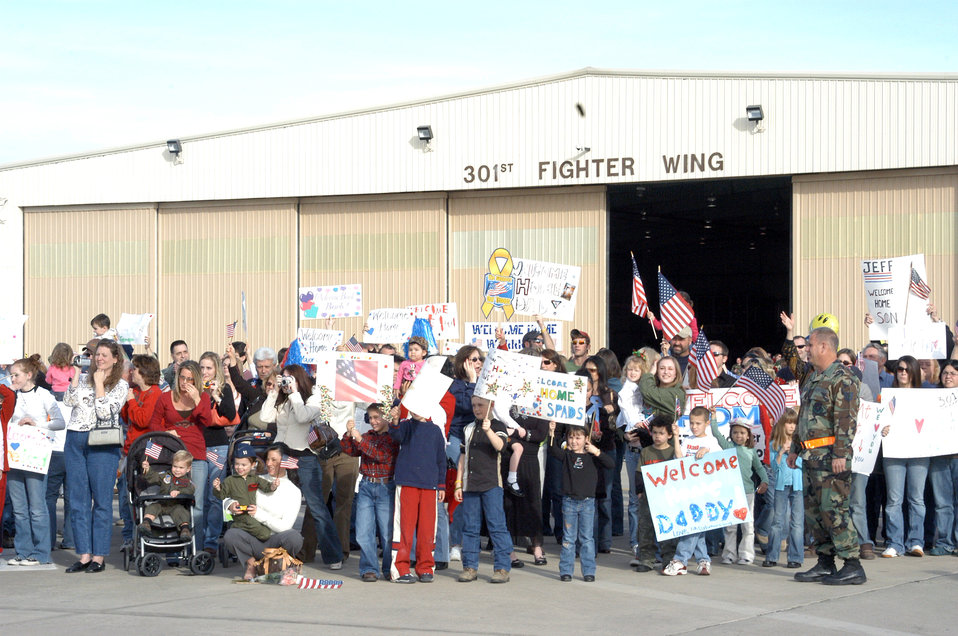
Welcome home

NAVAL AIR STATION – JOINT RESERVE BASE FORT WORTH, Texas (AFPN) -- Family and friends gather on the flightline wait for their loved ones to deplane. More than 150 301st Fighter Wing Airmen returned from Balad Air Base, Iraq Dec. 11.